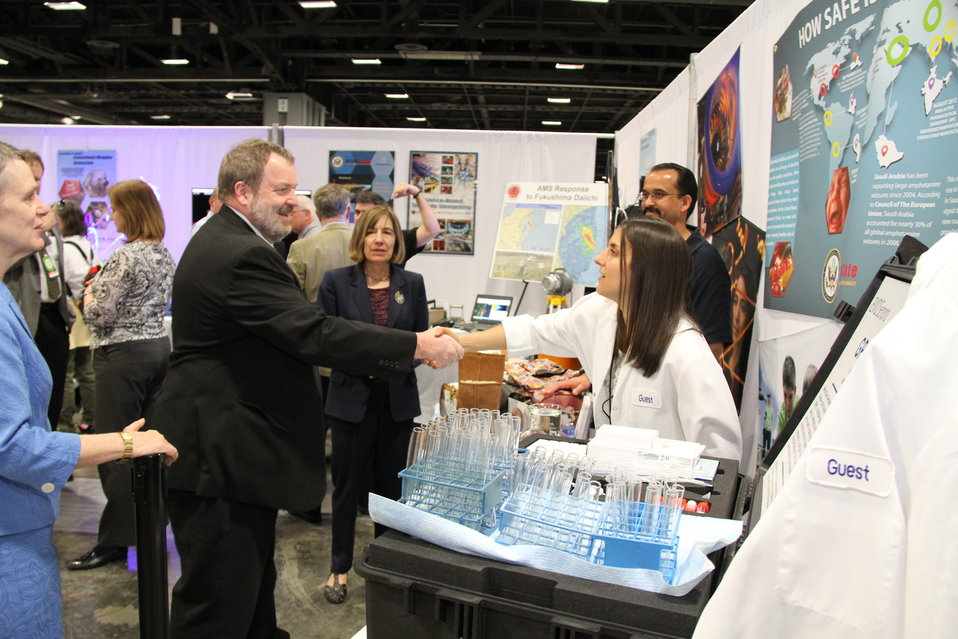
Science and Technology Adviser Colglazier Greets Volunteers at the USA Science and Engineering Festival

Science and Technology Adviser to the Secretary E. William Colglazier greets volunteers at the Department of State exhibit at the USA Science and Engineering Festival in Washington, DC on April 26, 2014.